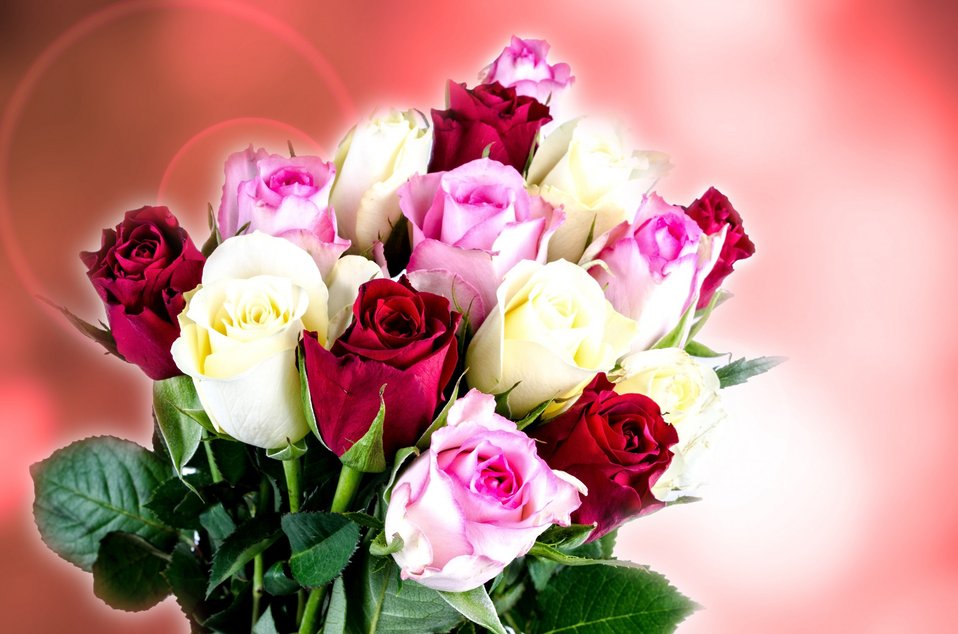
Flowers on the red background.